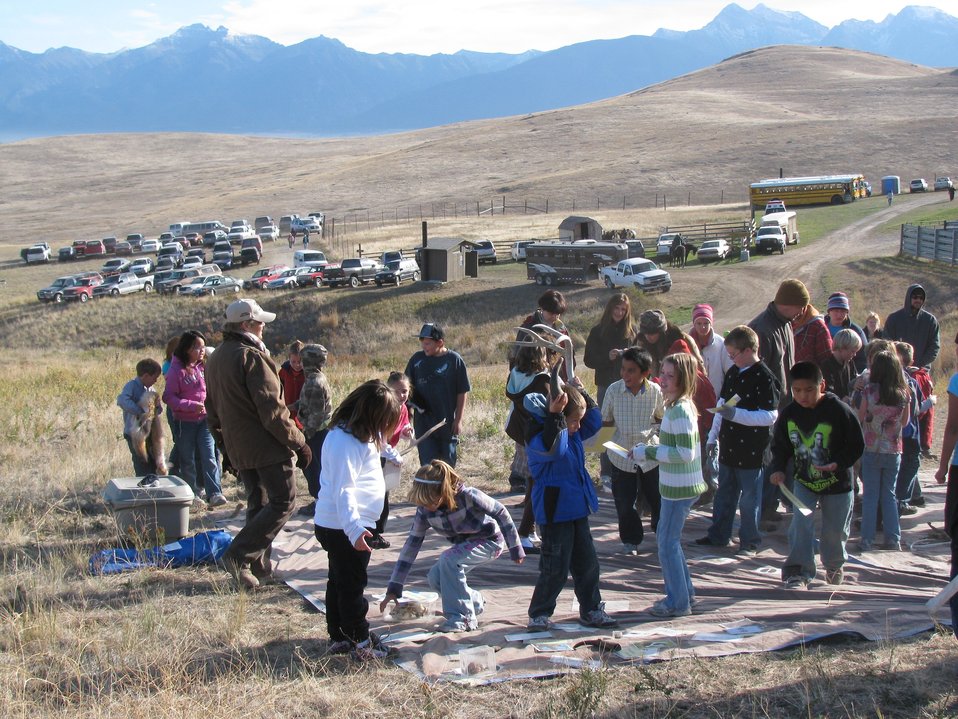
Annual Bison Round-up

The Annual Bison Round-up is held each year at the National Bison Range National Wildlife Refuge in Montana, providing activities for youth.